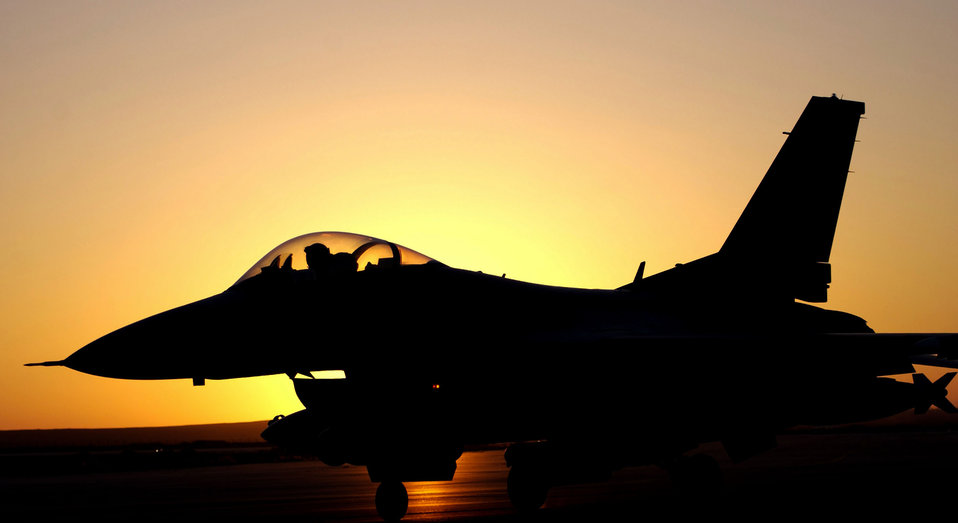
Night sortie

OPERATION IRAQI FREEDOM -- An F-16 Fighting Falcon prepares for take off on an operational sortie at a forward-deployed location March 29. According to a defense official, coalition air forces are averaging about 1,000 sorties a night after the first week of Operation Iraqi Freedom. The Air Force has also dropped more than 5,000 precision-guided munitions.